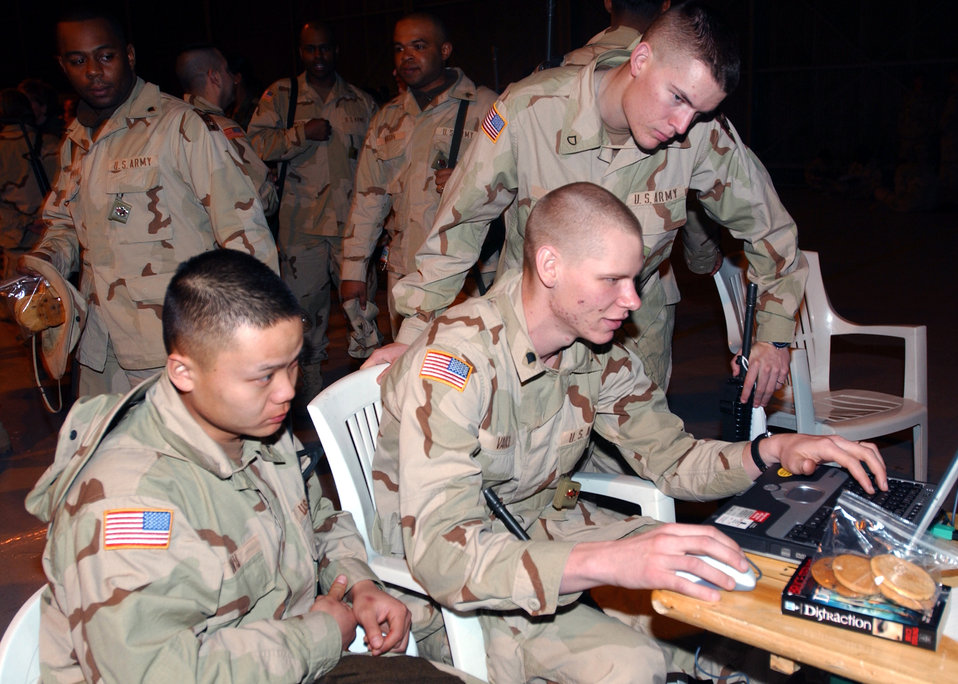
Passing time

AVIANO AIR BASE, Italy -- Army soldiers from Fort Lee, Va., play a computer game while on a layover here awaiting transportation to a forward-deployed location.